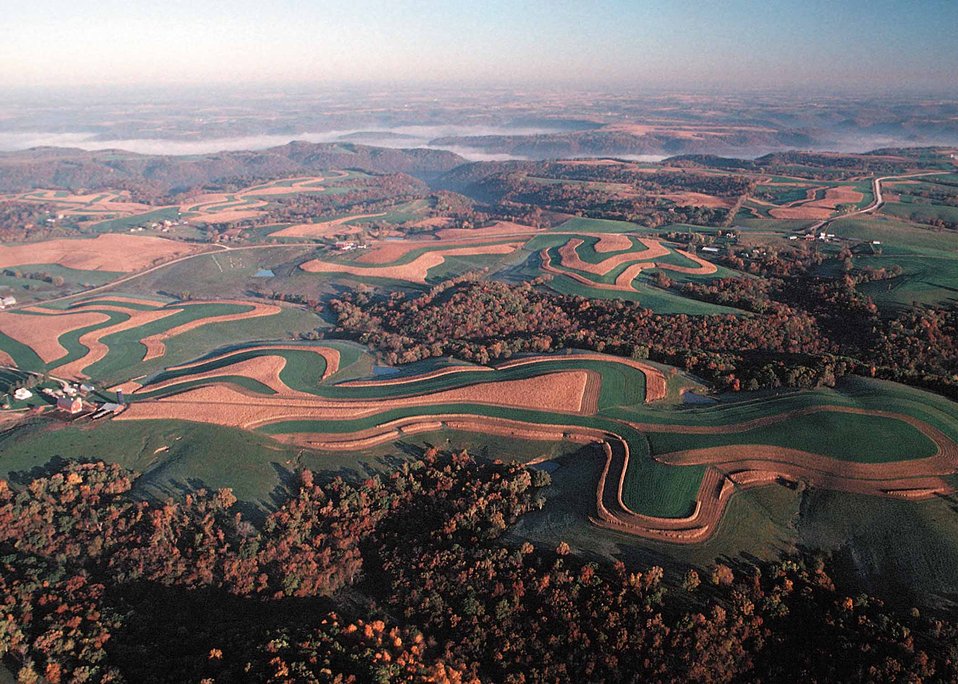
Contour stripcropping and managed forests in northeastern Iowa save soil on highly erodible land.